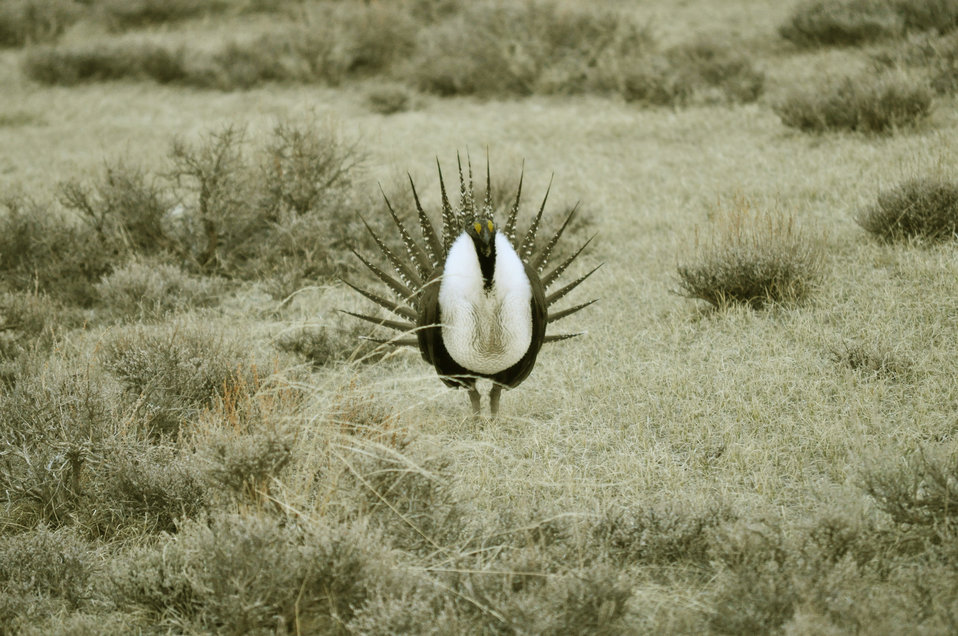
Male greater sage-grouse struts at lek (dancing or mating grounds) to attract females near Bodie, California.